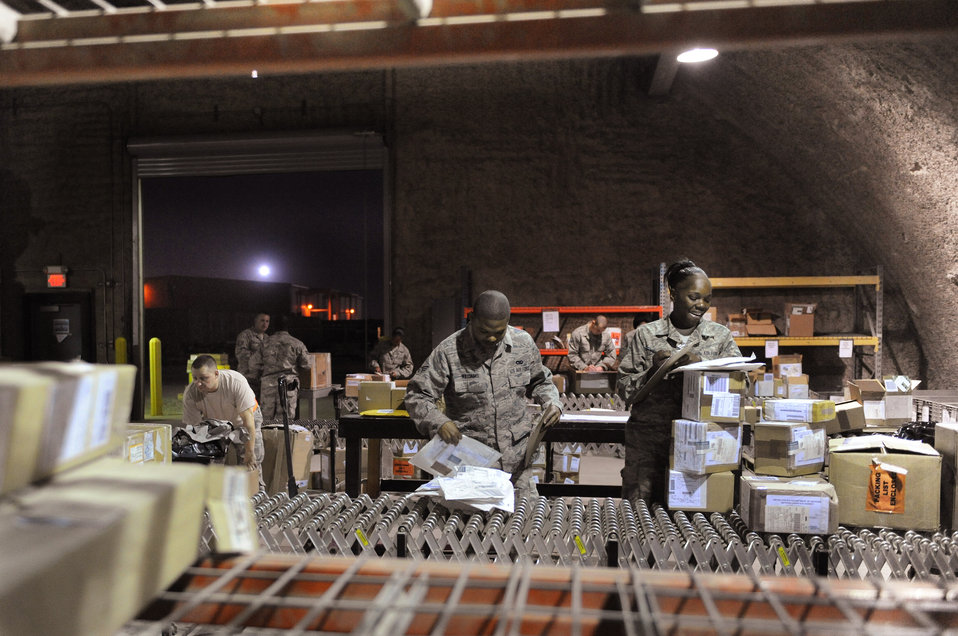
Making a list and checking it twice

Airmen of the 332nd Expeditionary Logistics Readiness Squadron in-check parcels from a shipment from FedEx Feb. 17 at Joint Base Balad, Iraq. The traffic management office is responsible for in-checking Air Force cargo from five parcel carriers.